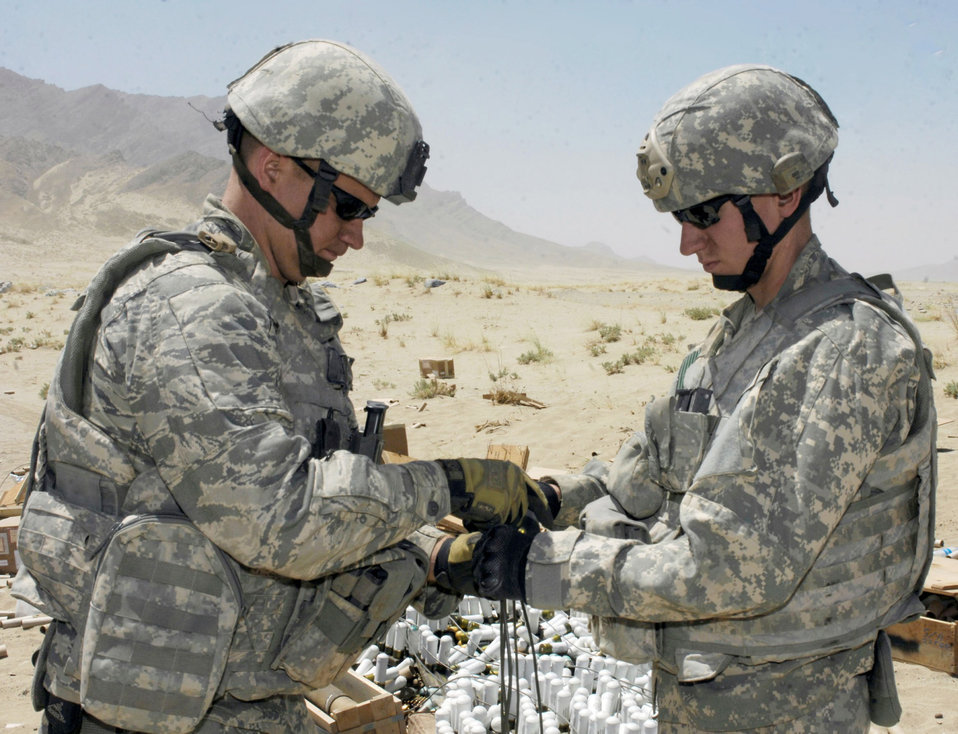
Bagram Airmen destroy explosives, munitions

Staff Sgts. Trent Rydberg (left) and Greg Talley tape together wire leads that send firing signals to C-4 explosive charges attached to a cache of ordnance Aug. 2 at a disposal range near Bagram Airfield, Afghanistan. Several hundred pounds of mixed ordnance, including discarded Soviet munitions from the 1970s, were destroyed. The Airmen are explosive ordnance disposal technicians with the 755th Air Expeditionary Group. Sergeant Rydberg is deployed from Scott Air Force Base, Ill., and Sergeant Talley is deployed from Dyess AFB, Texas.